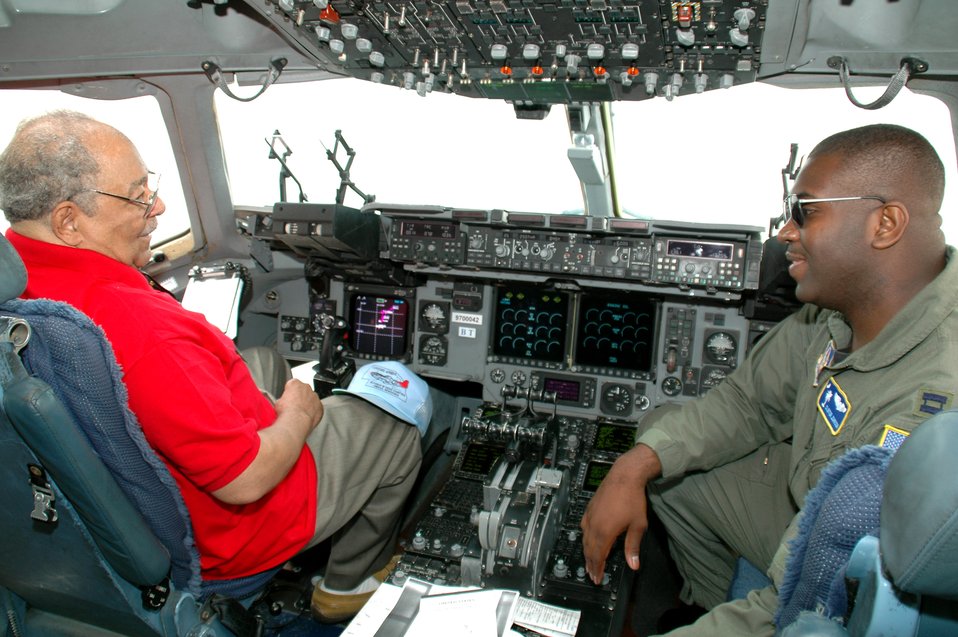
History comes full circle for black aviators

Capt. Clint Johnson talks with 81-year-old Charles Lane, an original Tuskegee Airman, as they sit in the flight deck of a C-17 Globemaster III on Aug. 5. The original Tuskegee Airmen were given the orientation flight by an all-black aircrew as part of the 2006 Tuskegee Airman Convention in Phoenix. Captain Johnson is a reservist with the 300th Airlift Squadron at Charleston Air Force Base, S.C.